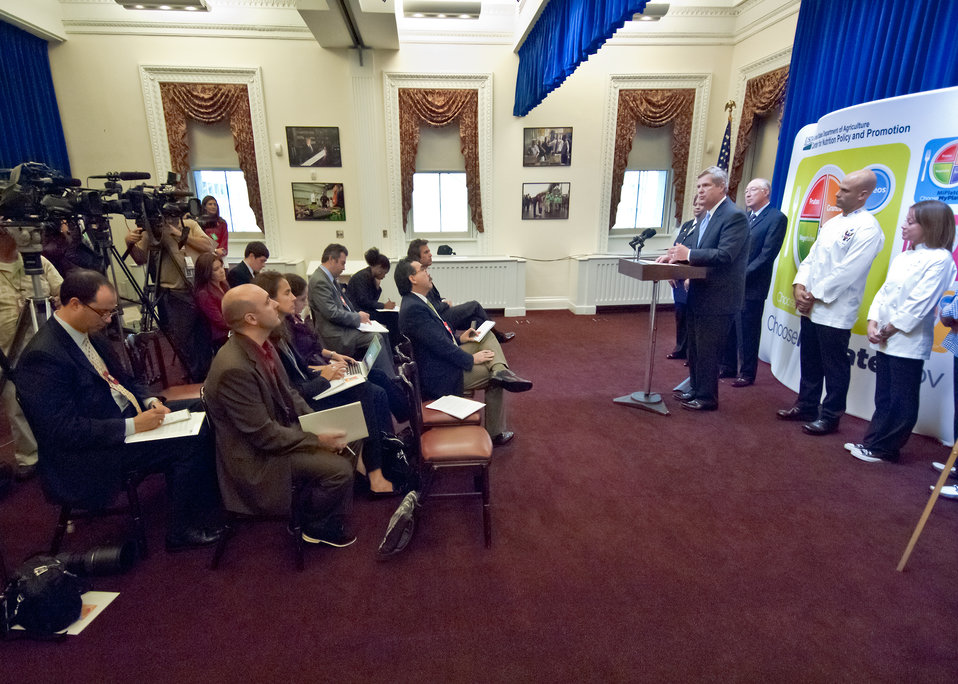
From left: Surgeon General Regina Benjamin, Interior Secretary Ken Salazar, Agriculture Secretary Tom Vilsack, White House Chef Sam Kass, Chef Marcella Valladolid and Chef Pepín highlighted the federal government's new food icon, MiPlato that will help serve as a reminder to help Hispanic consumers make healthier food choices as Part of the Hispanic Heritage Month Celebration. The event was held in the Eisenhower Executive Office Building in Washington, DC, Friday, September 30, 2011. Earlier this year, USDA unveiled MyPlate as a new generation icon with the intent to prompt consumers to think about building a healthy plate at meal times and to seek more information to help them do that by going to www.ChooseMyPlate.gov. The new MiPlato and MyPlate icons emphasize the fruit, vegetable, grains, protein and dairy food groups. The announcement is part of the Obama Administration’s celebration of Hispanic Heritage Month, which this year carries the theme “Renewing the American Dream,” and this week focuses on the community’s well being. The tips are part of a multi-year effort to raise awareness and educate consumers of every age on the importance of healthier eating and physical activity.